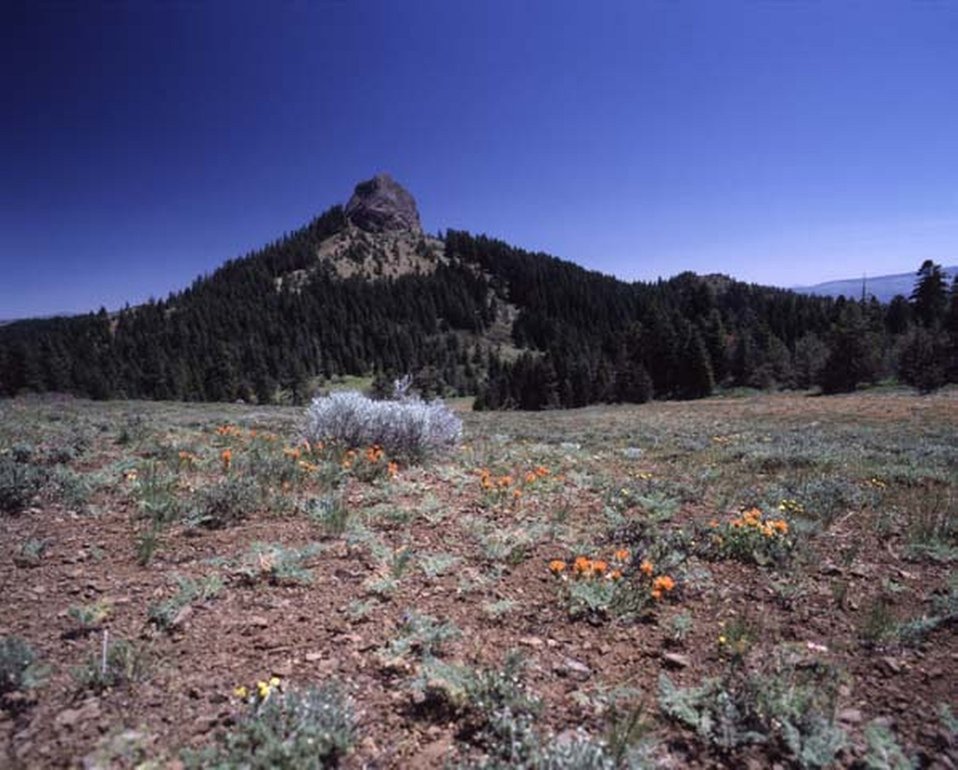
Far shot of Pilot Rock and Indian Paintbrush wildflowers.